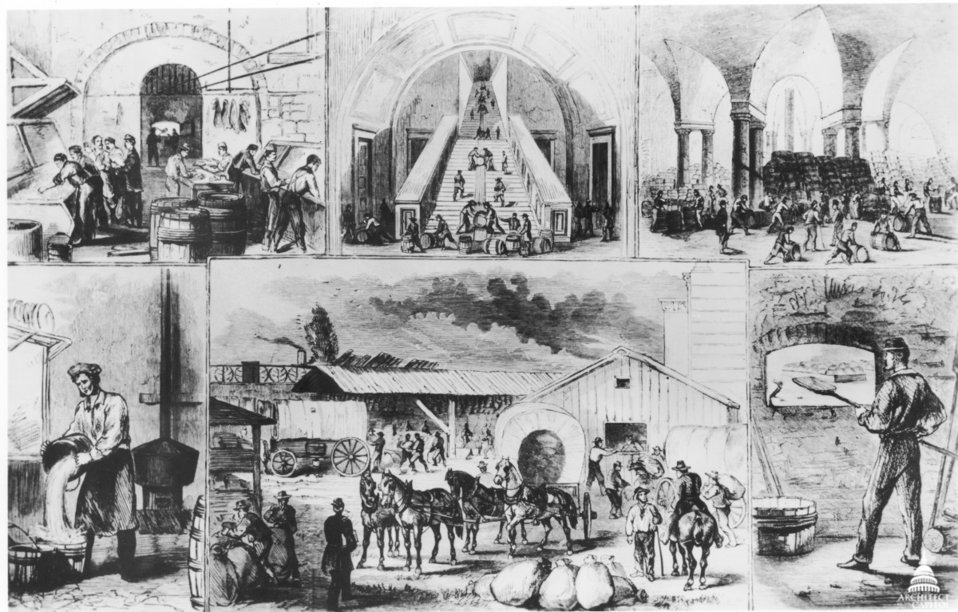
Capitol Subbasement in 1861

The Capitol subbasement served as a bakery in 1861, nearby (and within) the current offices of the Architect of the Capitol. The space featured in the upper center drawing today: www.flickr.com/photos/uscapitol/7846343148/